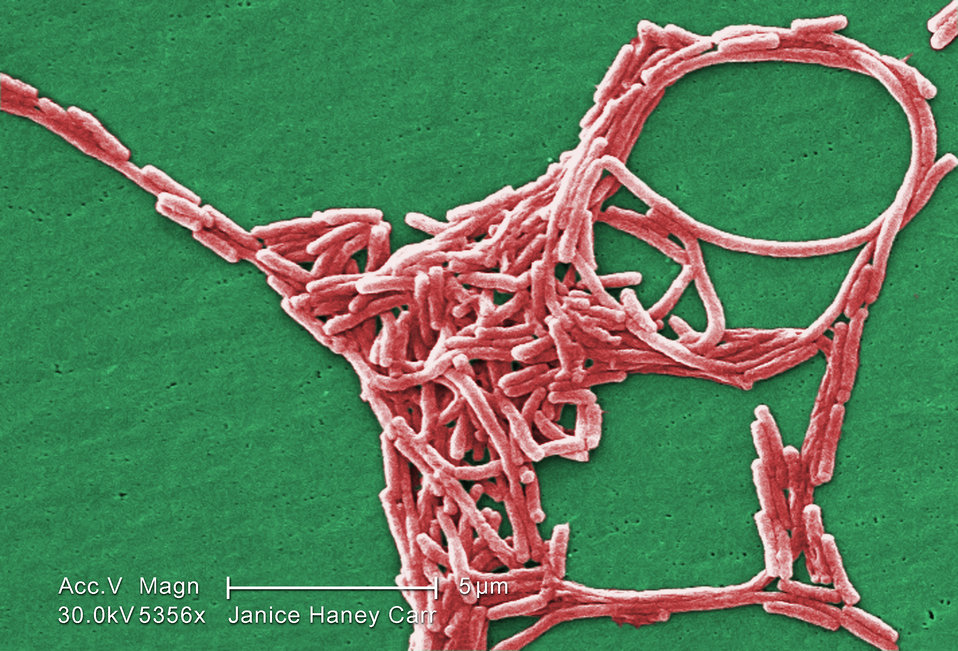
Under a moderately-high magnification of 5356X, this colorized scanning electron micrograph (SEM) depicted a grouping of Gram-negative Legionella pneumophila bacteria. Note that in some of these views you're able to see a number of the flagella emanating from these organisms. Please see PHIL 11092 through 11160 for additional SEMs of these organisms, specifically PHIL 11103 for a black and white version of this image.